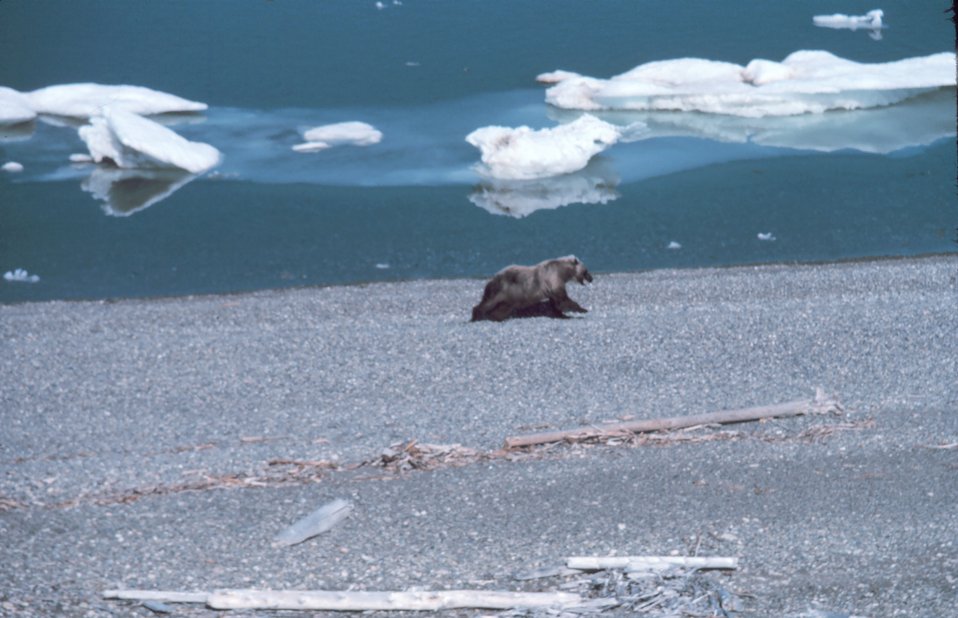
Brown bear - Ursus arctos - on the shore of the Beaufort Sea